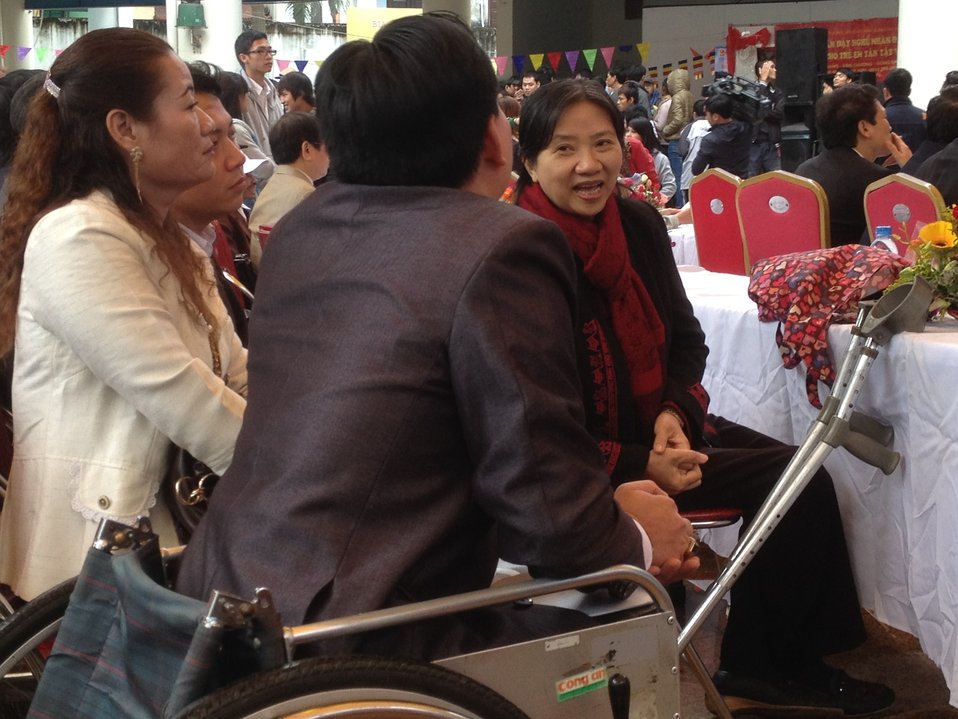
USAID joins celebration of International Day of Persons with Disabilities in Hanoi, Vietnam

December 2, 2012